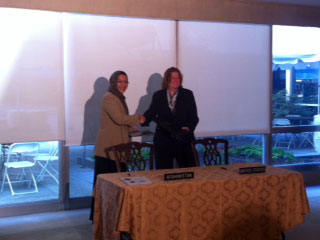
Assistant Secretary Richard and Afghan Minister of Public Health Dalil Shake Hands

Assistant Secretary for Population, Refugees, and Migration Anne C. Richard shakes hands with Afghan Minister of Public Health Dr. Suraya Dalil after signing a memorandum of understanding at the U.S. Department of State in Washington, D.C., on April 25, 2012.